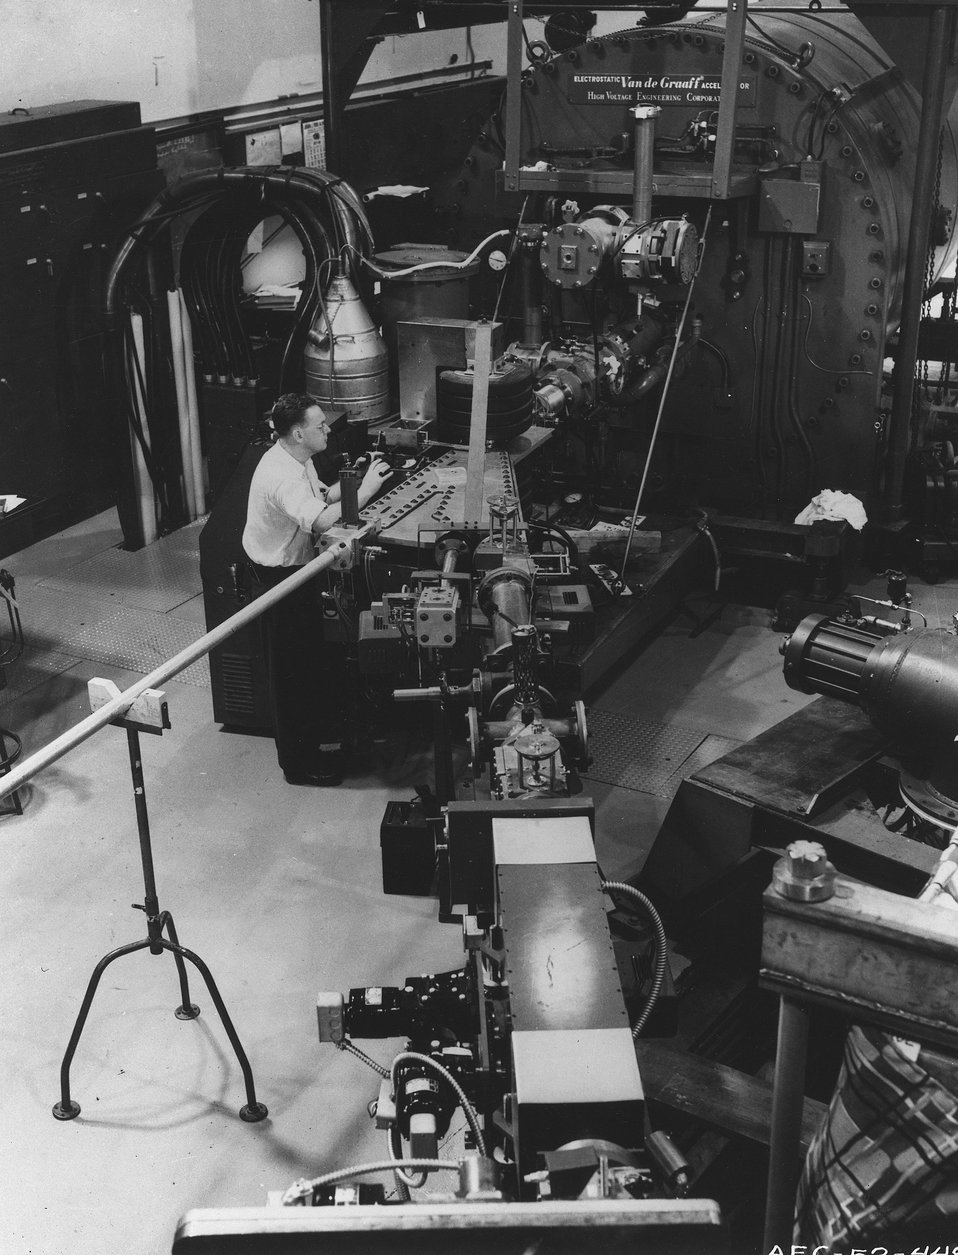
Injection system for the Cosmotron at the Brookhaven National Laboratory. c. 1952